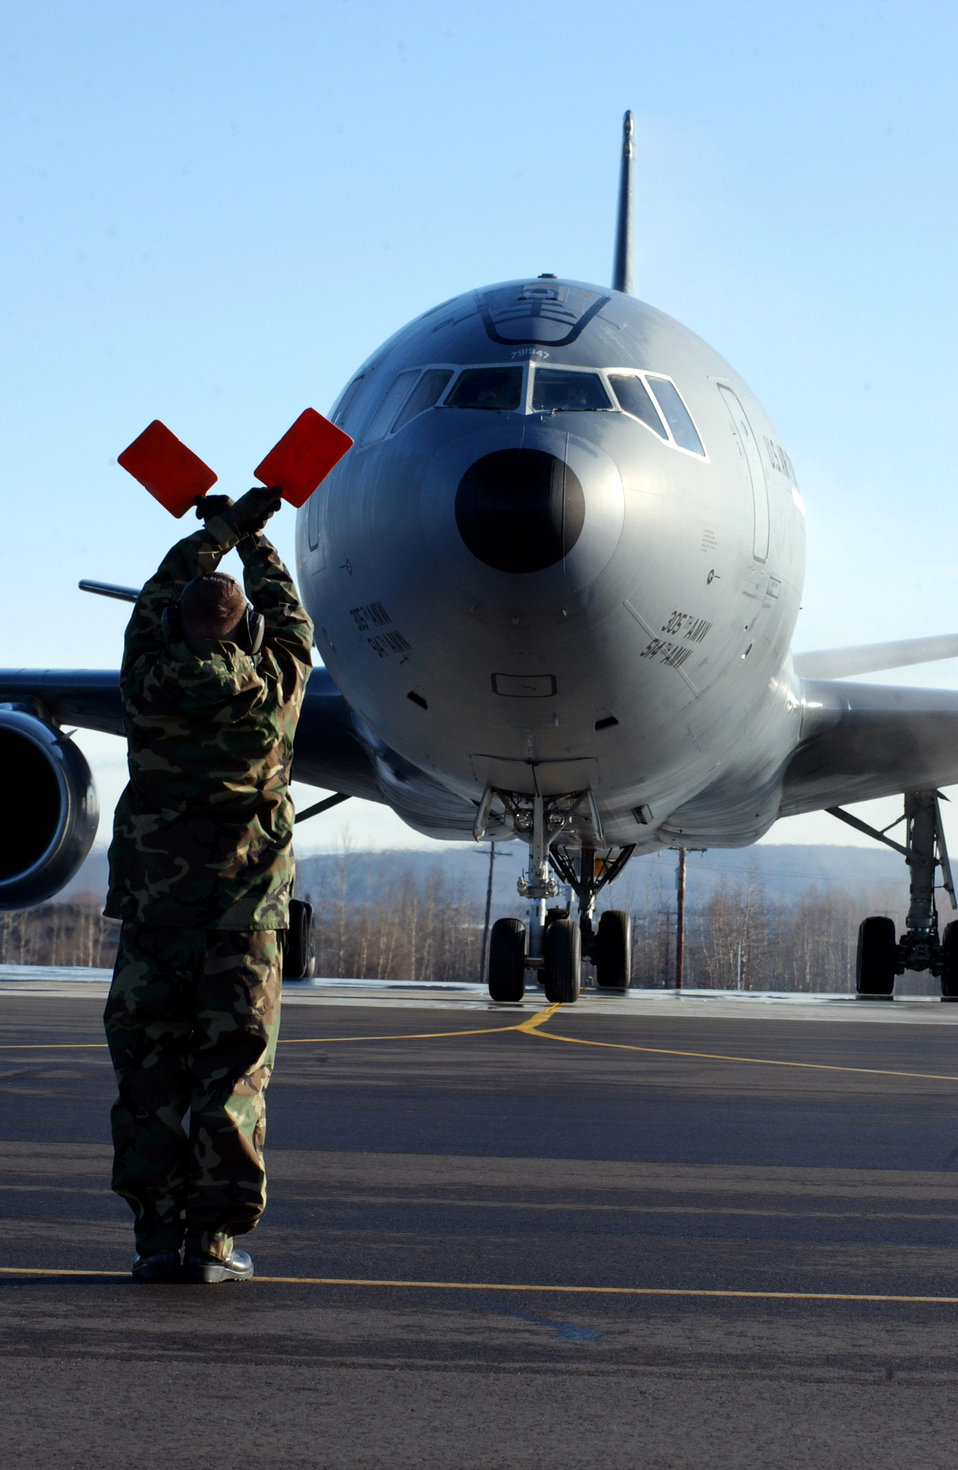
Air combat ready at Red Flag-Alaska

Staff Sgt. Martin Walker proceeds into place to marshal a KC-10 Extender April 13 during Red Flag-Alaska 07-1 at Eielson Air Force Base, Alaska. Red Flag-Alaska is a Pacific Air Forces-directed field training exercise for U.S. forces flown under simulated air combat conditions. It is conducted on the Pacific Alaskan Range Complex with air operations flown out of Eielson and Elmendorf Air Force Bases. Sergeant Walker is assigned to the 305th Maintenance Squadron at McGuire AFB, N.J.